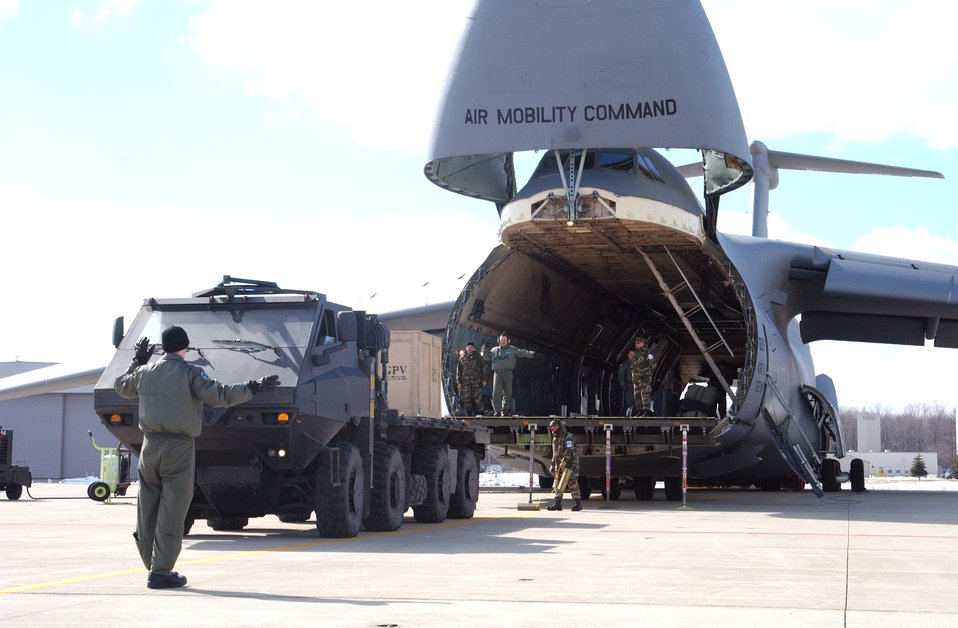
Guard Airmen help drive transformation

SELFRIDGE AIR NATIONAL GUARD BASE, Mich. -- A C-5 Galaxy undergoes loading and unloading trials with the Army's prototype general purpose vehicle here. The exercise follows earlier tests of the vehicle on a C-130 Hercules from the 171st Airlift Squadron based here. The C-5 is from Dover Air Force Base, Del., with a mixed crew of active-duty and Reserve Airmen.